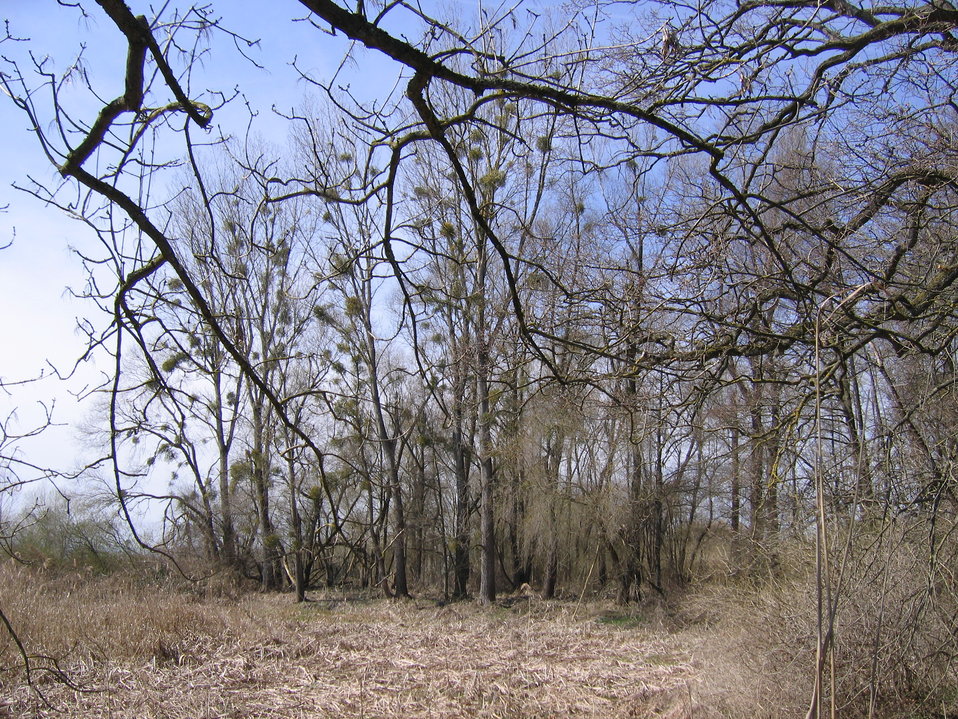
Deutsch: Deutschland - Baden-Württemberg - Bodenseekreis - Eriskirch: Auenwald im Eriskircher Ried